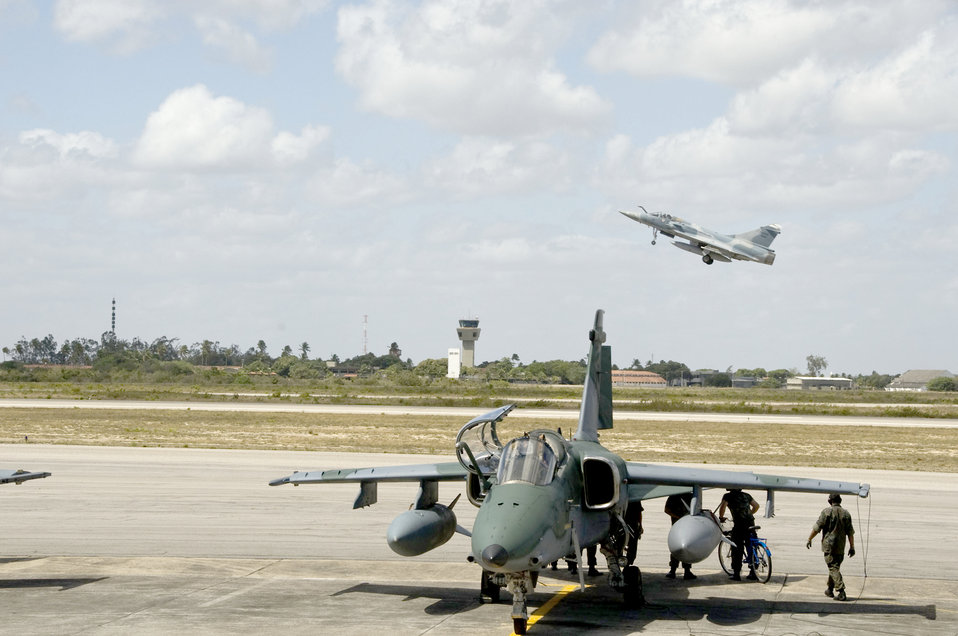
CRUZEX PB

A Brazilian F-2000 aircraft takes off while maintenance is performed on a Brazilian A-1 aircraft during the Cruzeiro Do Sul (Southern Cross) exercise Nov. 11, 2010, at Natal Air Base, Brazil. CRUZEX is a multinational, combined exercise involving the air forces of Brazil, Chile, Uruguay, Argentina and France. Observers from numerous other countries, with more than 60 aircraft also were involved. This was the first time U.S. Air Force was invited to participate.